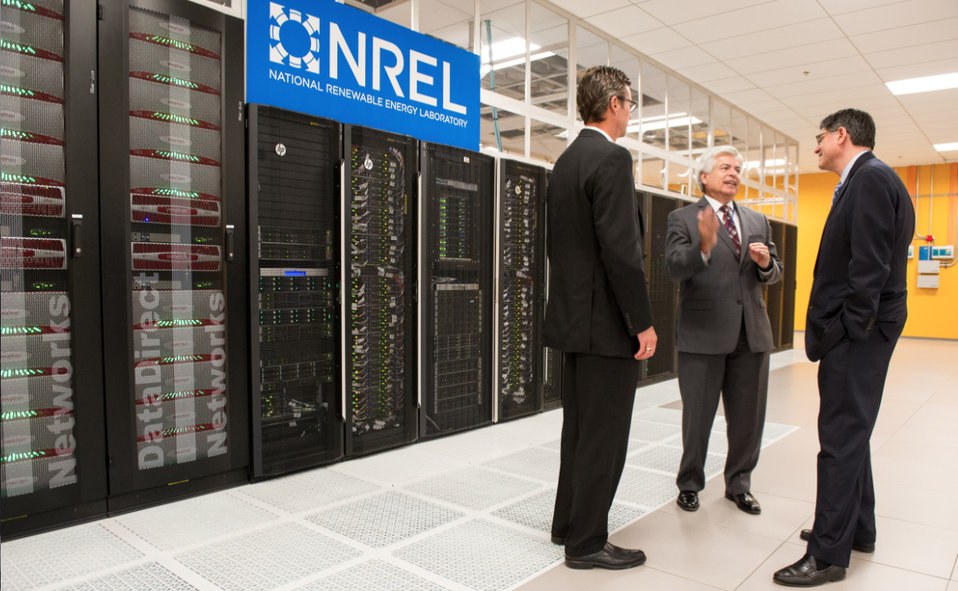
Secretary Lew visits NREL in Colorado

July 01, 2013 - L-R, Steve Hammond, Director, Computational Science Center, NREL Director Dan Arvizu and Treasury Secretary Jacob J. Lew visit the High Performance Computing Data Center during a tour the Energy Systems Integration Facility (ESIF) at the National Renewable Energy Laboratory in Golden, CO. Secretary Lew toured the National Renewable Energy Laboratory (NREL), during a visit to Colorado, highlighting the importance of investing in American innovation to create a strong, competitive and vibrant economy in the 21st century.